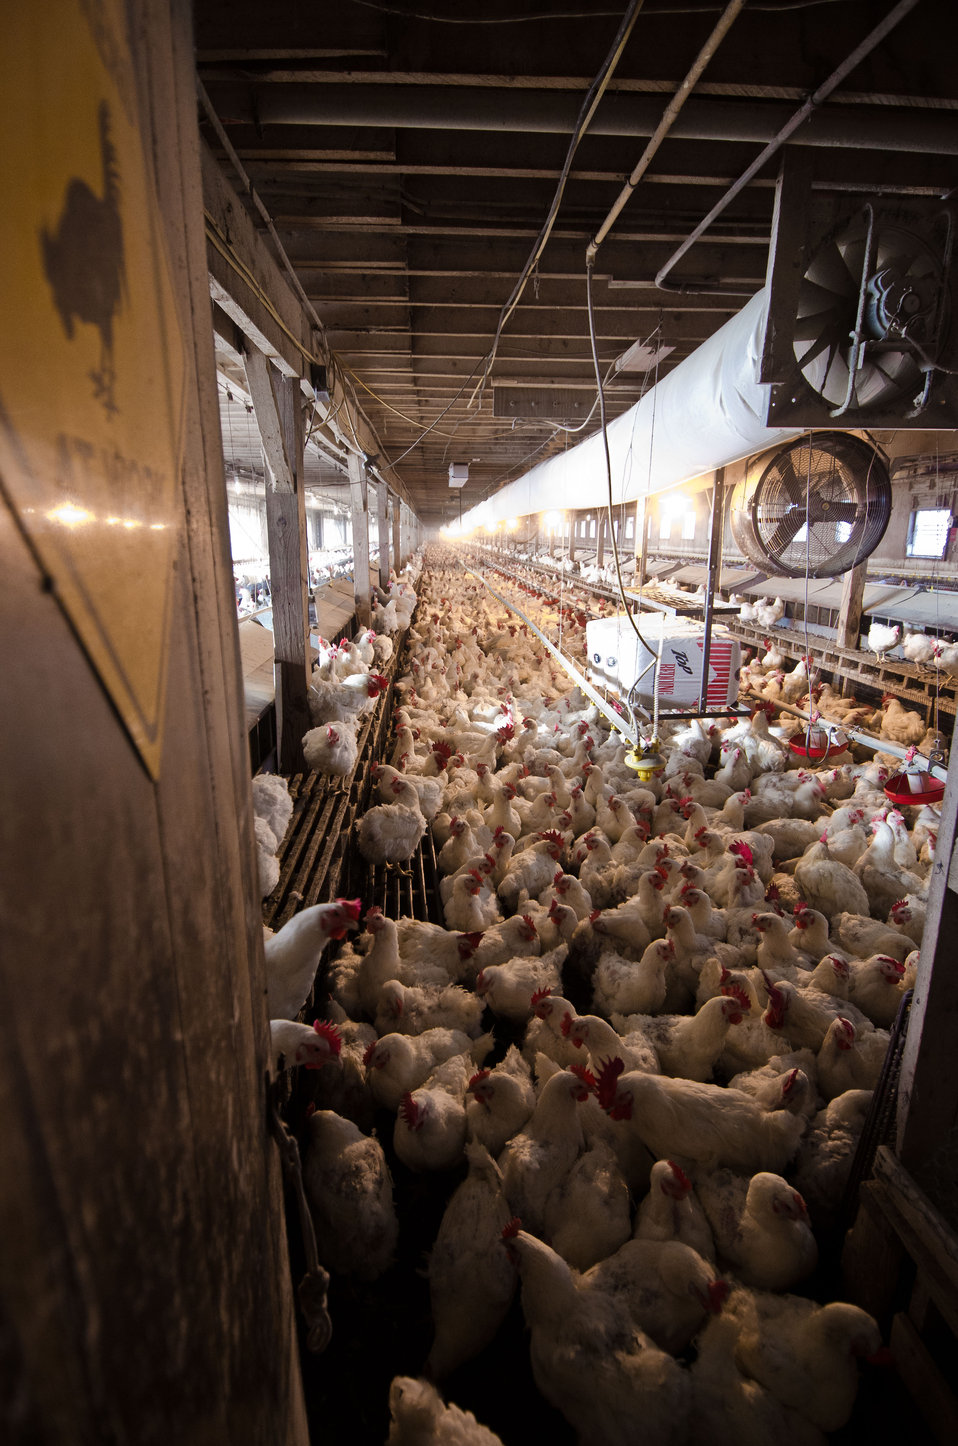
Some of the 17,000 poultry at Seldom Rest Farms located, north of Myerstown, PA, on Wednesday, April 20, 2011. The chickens are kept in a two story chicken house and produce approximately 2.5 million chicks each year. To supplement their electrical needs, they chose a contractor who knew about United States Department of Agriculture (USDA) Rural Energy for America program (REAP) grants and helped them through the application process. The farm was awarded a $152,000 grant (25% of the cost). to install the 1001kW solar array to power their farm, a neighboring farm and homes on the local electrical grid. The 240 solar panels were ground mounted with 5-foot clearance underneath to allow sheep to graze and rest underneath protected from the rain, sun or snowfall. Ten inverters change the DC electrical energy from the panels into AC energy that goes into the local power grid. Spring statistics show it is producing more than expected. REAP offers grants and/or loan guarantees for the purchase and installation of renewable energy generating systems and for energy efficiency improvements.